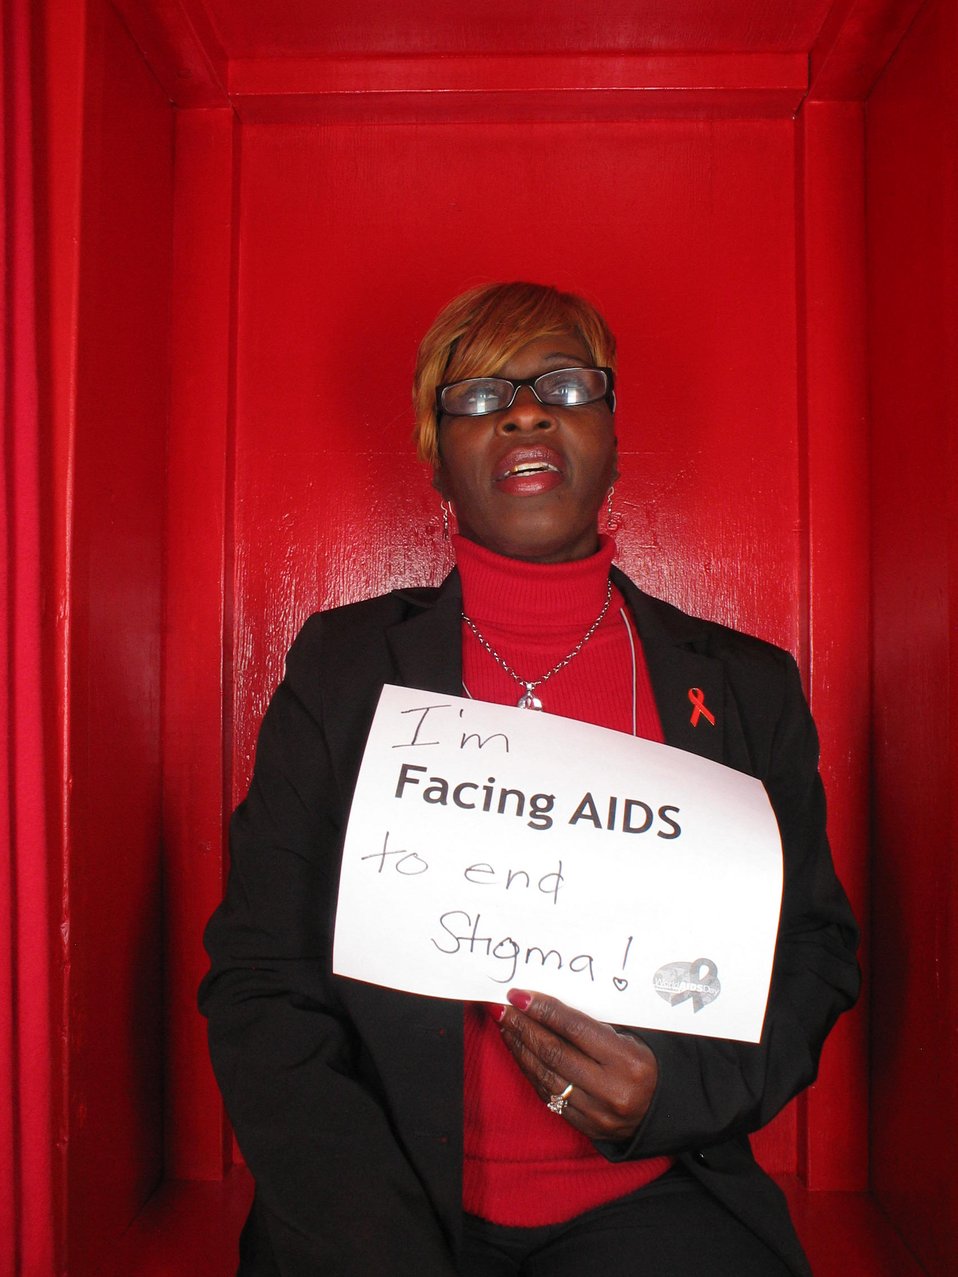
I'm Facing AIDS to end stigma!